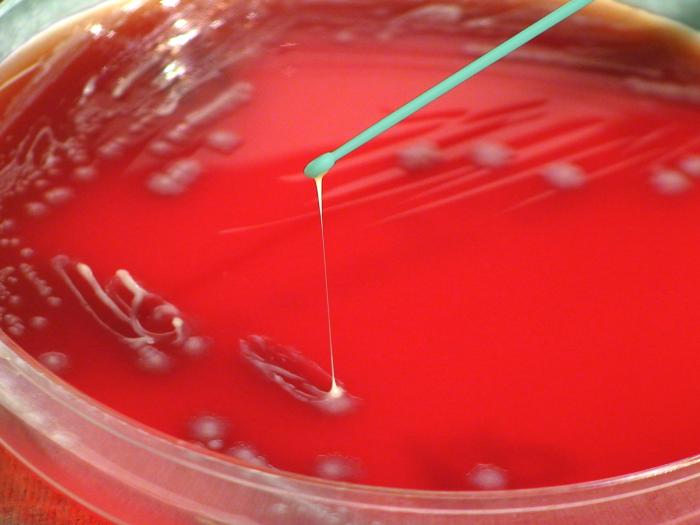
This photograph depicts the colonial morphology displayed by Gram-negative Yersinia pestis bacteria, which was grown on a medium of sheep's blood agar (SBA), for a 48 hour time period, at a temperature of 37�C. See PHIL 12491, for anadditional view revealing the tenacious nature of these colonies when touched by an inoculation loop, and their tendency to form 'stringy', sticky strands.